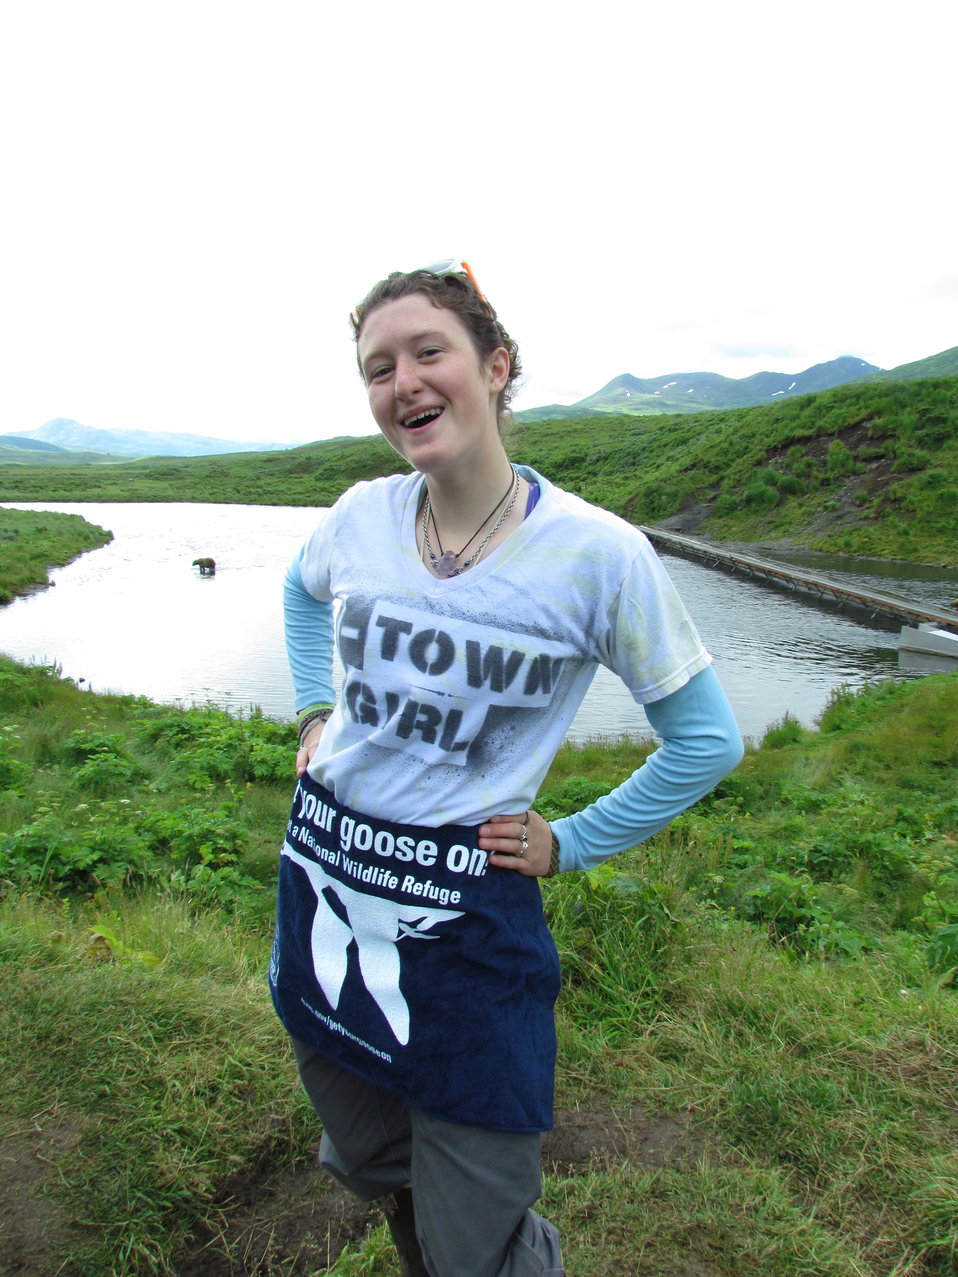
Get Your Goose On! - Alaska Style

YCC crew member, Iris Blakeslee, with Kodiak Brown Bears in the background

Credit: Shelly Lawson / USFWS

The Kodiak National Wildlife Refuge is a United States National Wildlife Refuge in the Kodiak Archipelago in southwestern Alaska, United States.

The Kodiak National Wildlife Refuge includes the southwestern two-thirds of Kodiak Island, Uganik Island, the Red Peaks area of Afognak Island and all of Ban Island in the archipelago. It encompasses 1,990,418 acres (8,054.94 km2).[2] The refuge is administered from offices in Kodiak.

The refuge contains seven major rivers and about 100 streams. It is a spawning ground for all six species of Pacific Ocean salmon, trout and several other fish species, as well as a nesting ground for 250 species of bird, many of which feed on salmon. The refuge has only six native species of mammals: Kodiak brown bear, red fox, river otter, ermine, little brown bat and tundra vole. The non-native mammals Sitka deer, mountain goat, Roosevelt elk, snowshoe hare and beaver were introduced to the archipelago between the 1920s and 1950s and are now hunted and trapped.

The climate of the refuge is that of southern Alaska, mild and rainy. Many areas in the refuge are densely forested with Sitka Spruce at lower elevations. There are grasslands in drier areas and at higher elevations. The refuge contains several small glaciers.